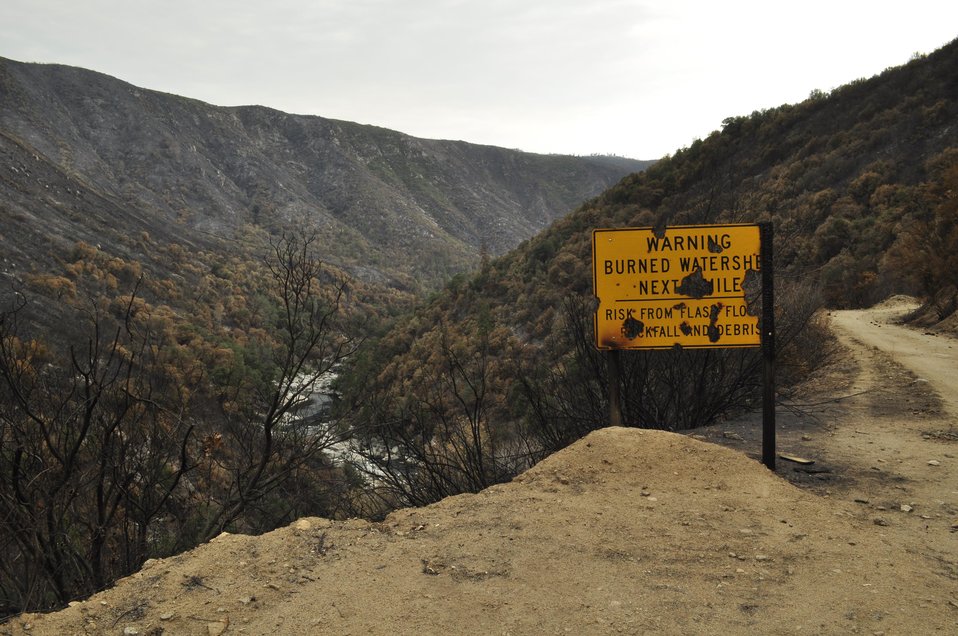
A burned watershed warning sign that was burned in the Rim Fire marks the entrance to a damage area. BAER is a rapid assessment of burned watersheds by a BAER team to identify imminent post-wildfire threats to human life and safety property and critical natural or cultural resources on National Forest System lands and take immediate actions to implement emergency stabilization measures before the first major storms. Fires result in loss of vegetation exposure of soil to erosion and increased water runoff that may lead to flooding increased sediment debris flows and damage to critical natural and cultural resources. BAER team members implement seeding and mulching installation to prevent erosion, erect temporary water run-off control structures that will protect recovering areas, and installation of warning signs, replace safety related facilities, remove safety hazards, prevent permanent loss of habitat for threatened and endangered species, and prevent the spread of noxious weeds and protect critical cultural resources. The Rim Fire in the Stanislaus National Forest near in California began on Aug. 17, 2013 and is under investigation. The fire has consumed approximately 256,169 acres and is 84% contained.